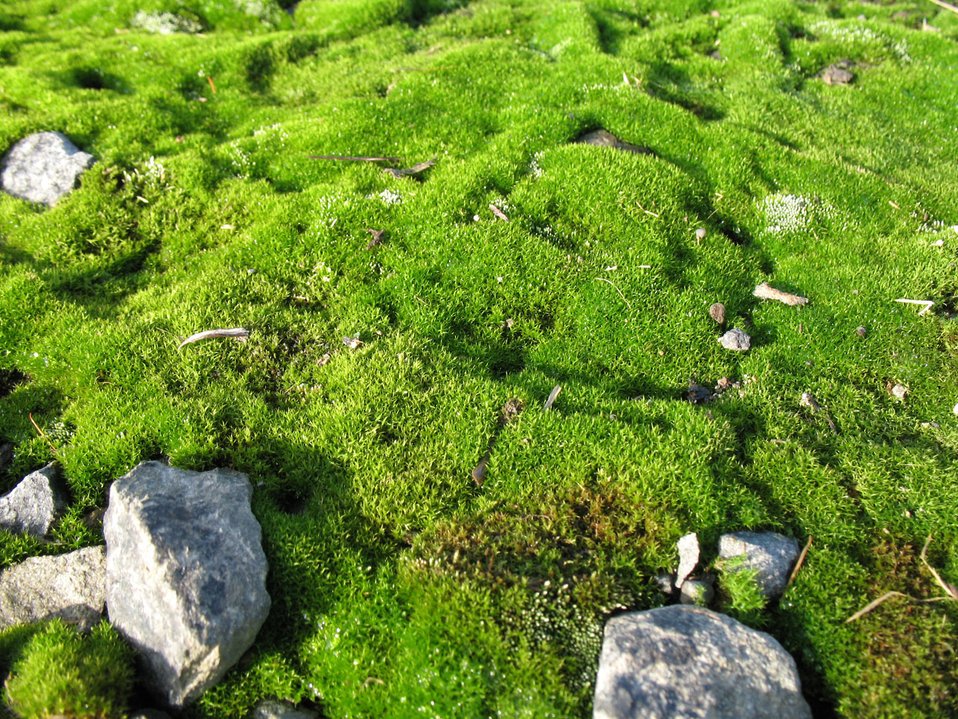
Moss and stones

Fresh green moss with some stones around..